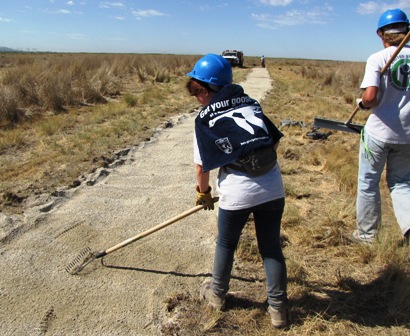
Trail Building

Youth Conservation Corps members help build a trail at Utah's Bear River Migratory Bird Refuge.